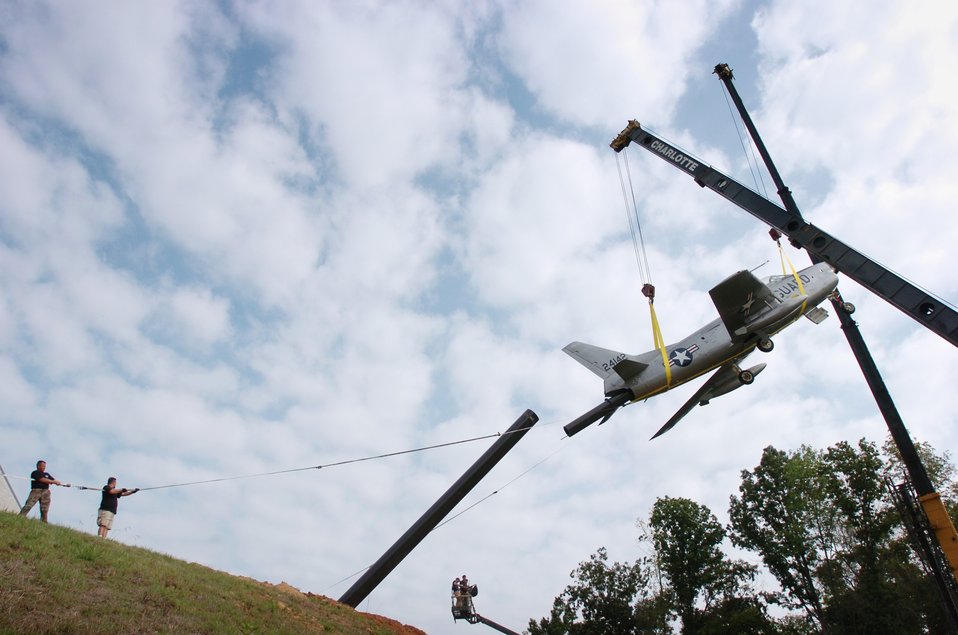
Sabre in the sky

Airmen from the North Carolina Air National Guard's 145th Civil Engineer Squadron assist placing an F-86 Sabre on a mount to overlook the main gate in Charlotte, N.C. A squadron of F-86s were assigned to the Air National Guard during the 1960s.